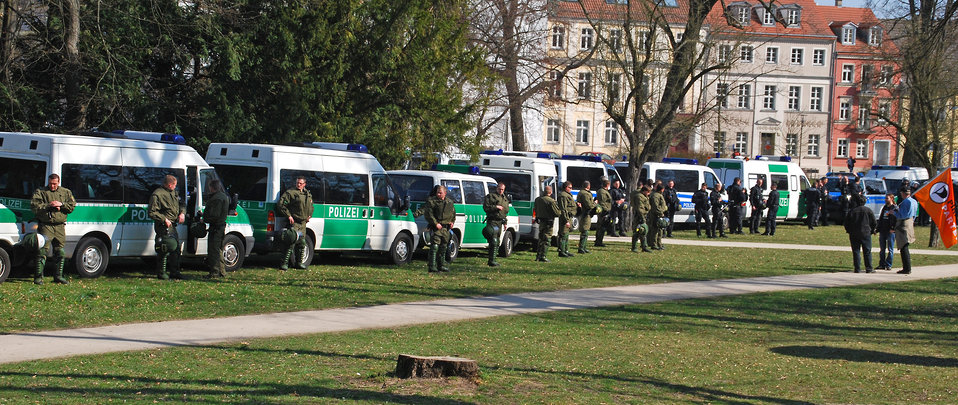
Proteste gegen den Nazi-Aufmarsch am 24.3.2012 in Frankfurt (Oder)